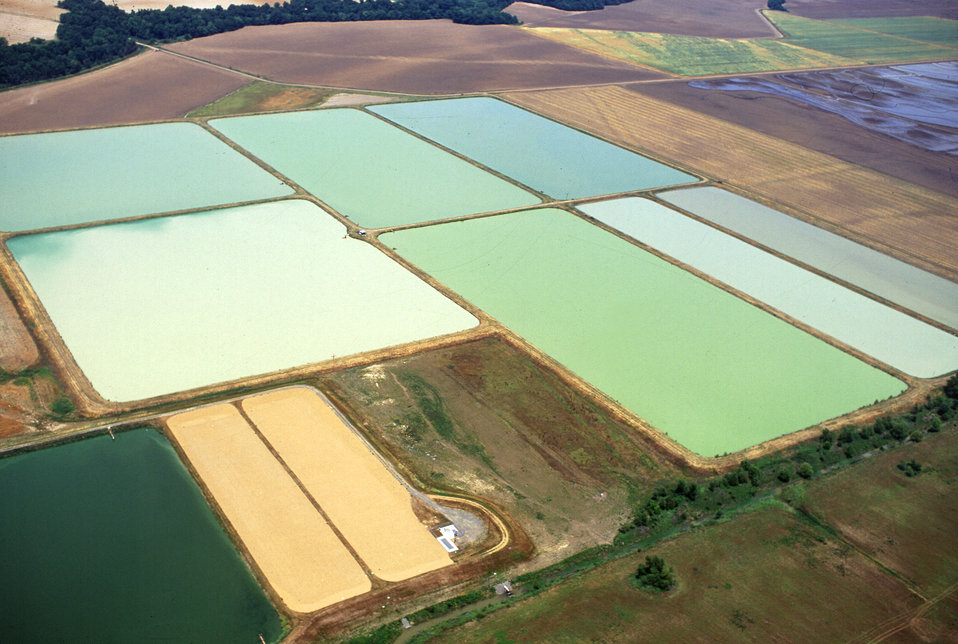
An aerial view of catfish ponds in Louisiana resembles an abstract painting. The color differences between ponds can be correlated to the number and type of algae present within the ponds.